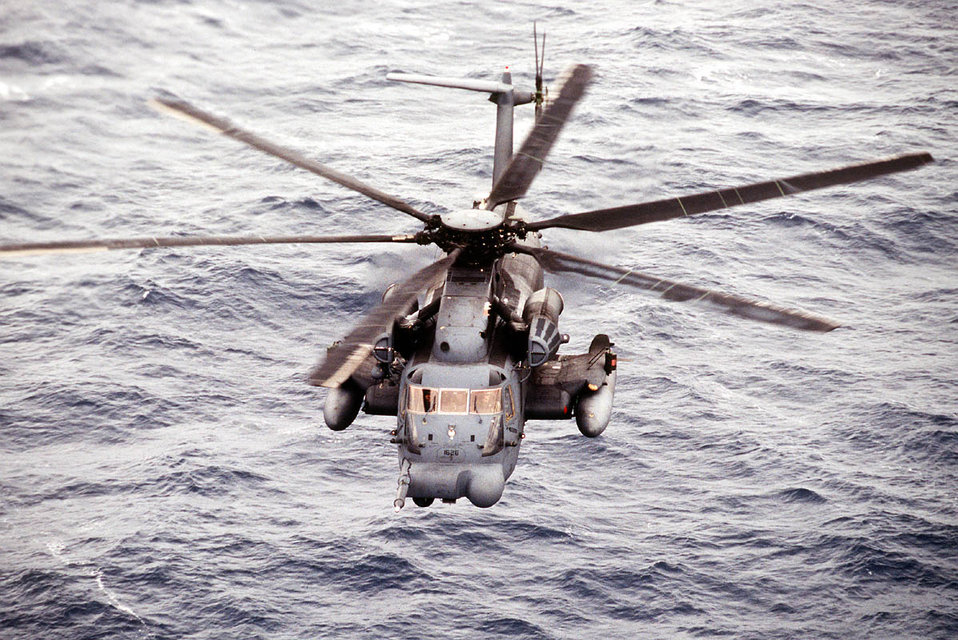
Pave Low III

FILE PHOTO -- The MH-53J's mission is to perform low-level, long-range, undetected penetration into denied areas, day or night, in adverse weather, for infiltration, exfiltration and resupply of special operations forces. The MH-53J Pave Low III heavy-lift helicopter is the largest and most powerful helicopter in the Air Force inventory, and the most technologically advanced helicopter in the world. Its terrain-following, terrain-avoidance radar and forward-looking infrared sensor, along with a projected map display, enable the crew to follow terrain contours and avoid obstacles, making low-level penetration possible. The helicopter is equipped with armor plating, and a combination of three 7.62mm miniguns or .50 caliber machine guns. It can transport 38 troops or 14 litters and has an external cargo hook with a 20,000-pound capacity. The MH-53J has twin turbo-shaft engines; self-lubricating, all-metal main and tail rotors; and a large horizontal stabilizer on the tail rotor pylon's right side.